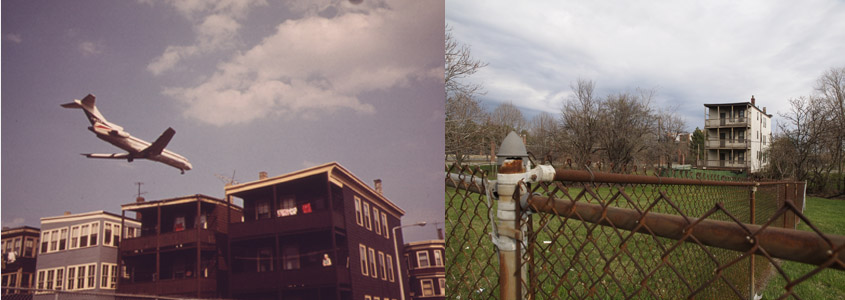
East Boston, MA 1973 and 2012 by Michael P. Manheim

Then & Now photographs contributed by former Documerica photographer Michael Philip Manheim.

Full Documerica set by Manheim